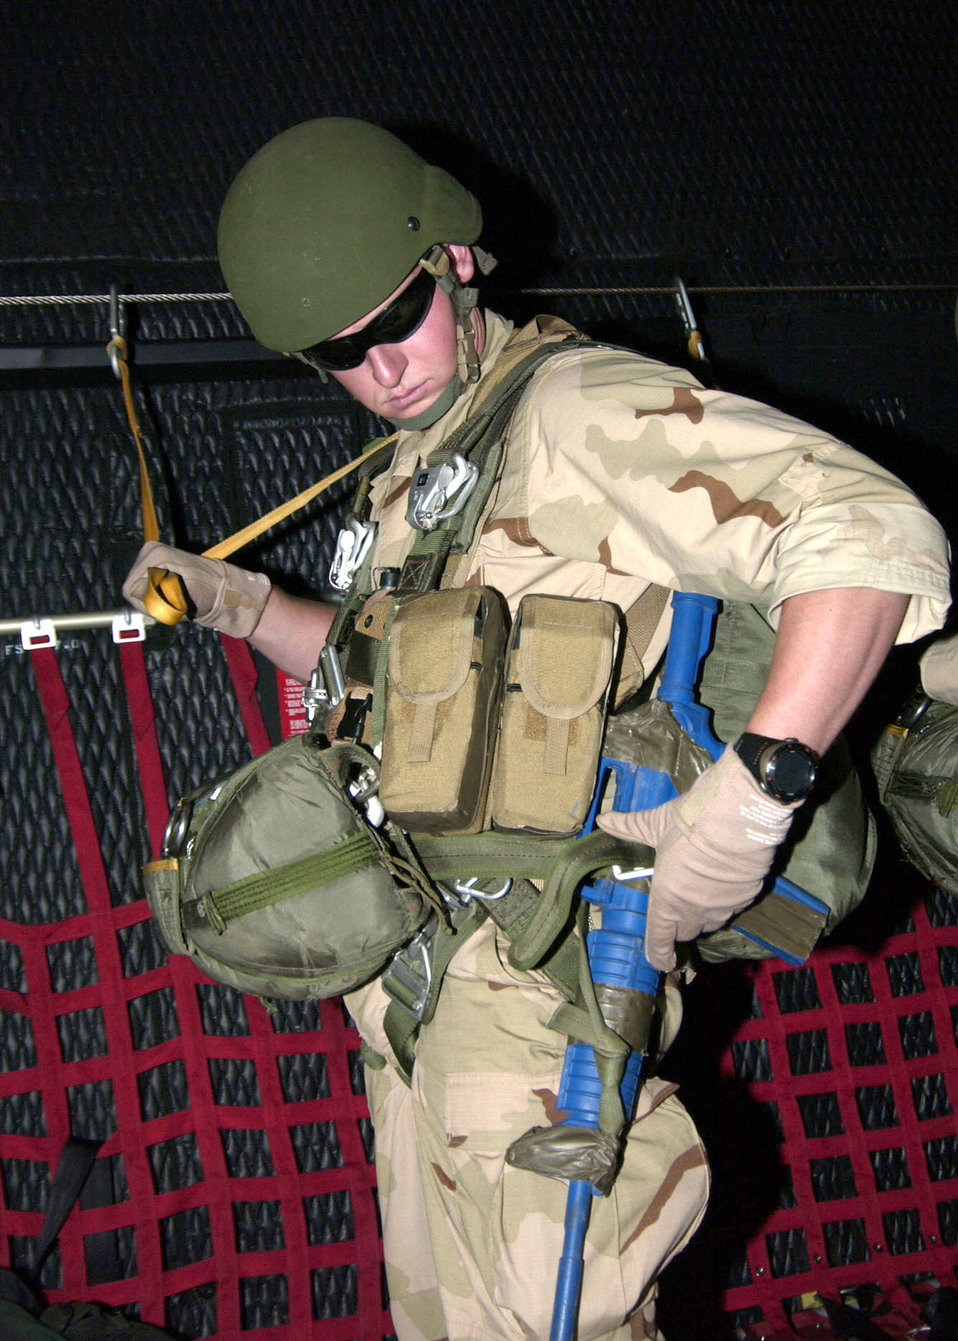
Timely response

Senior Airman Brent McAllister checks equipment on board a C-130 Hercules while participating in a major accident response exercise at Gila Bend Auxiliary Air Field, Ariz., on Tuesday, May 30, 2006. The scenario involved a simulated plane crash with 20 survivors and was part of a major accident response exercise. Airman McAllister is a pararescueman with the 48th Rescue Squadron at Davis-Monthan Air Force Base, Ariz.